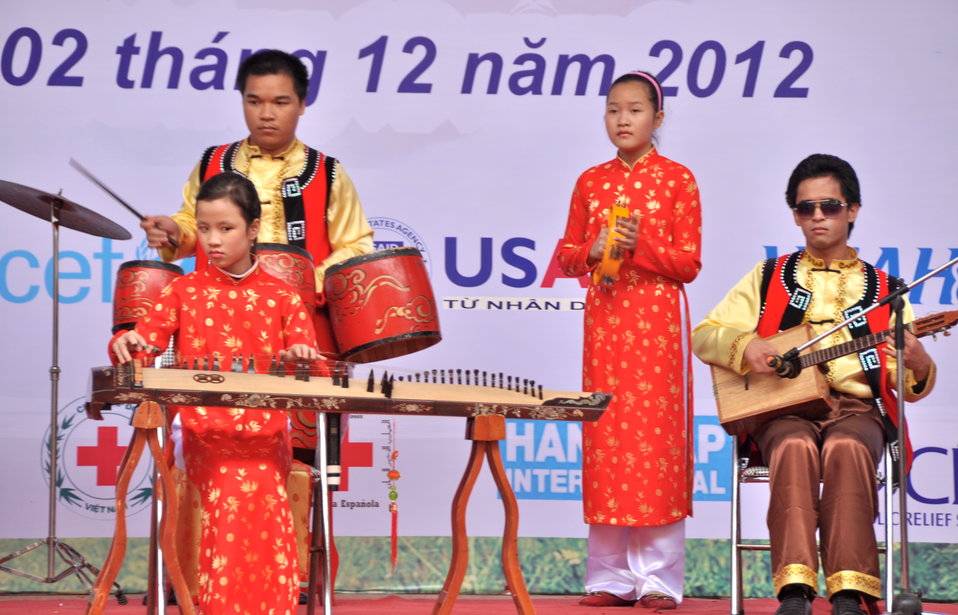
USAID joins celebration of International Day of Persons with Disabilities in Hanoi, Vietnam

December 2, 2012